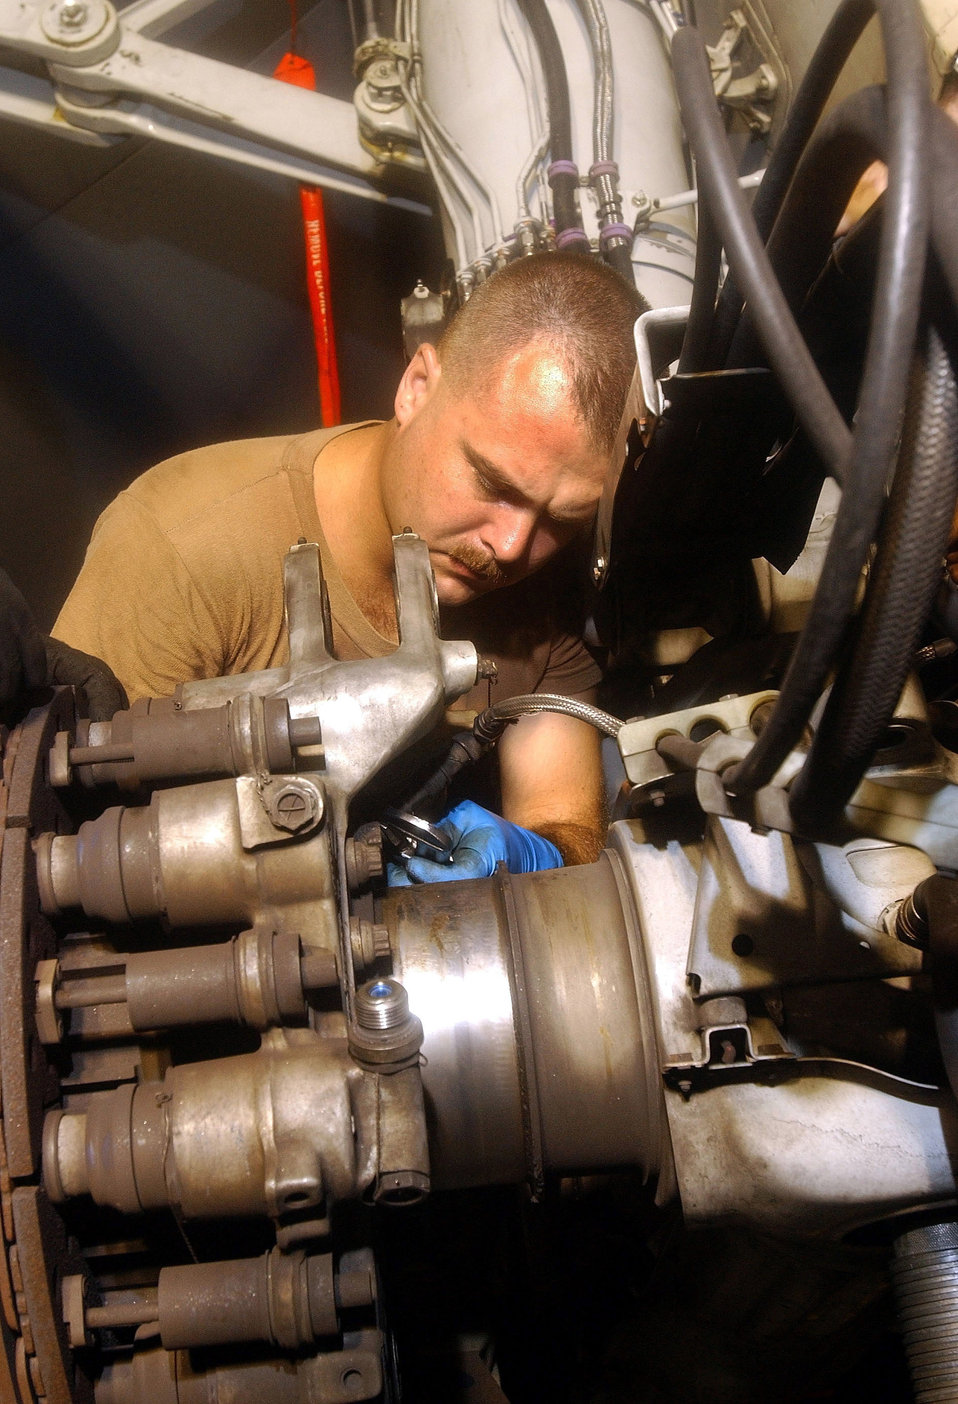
Brake job

DIEGO GARCIA, Indian Ocean -- An Air Force crew chief replaces the brakes on a KC-10A Extender in support of Operation Enduring Freedom.